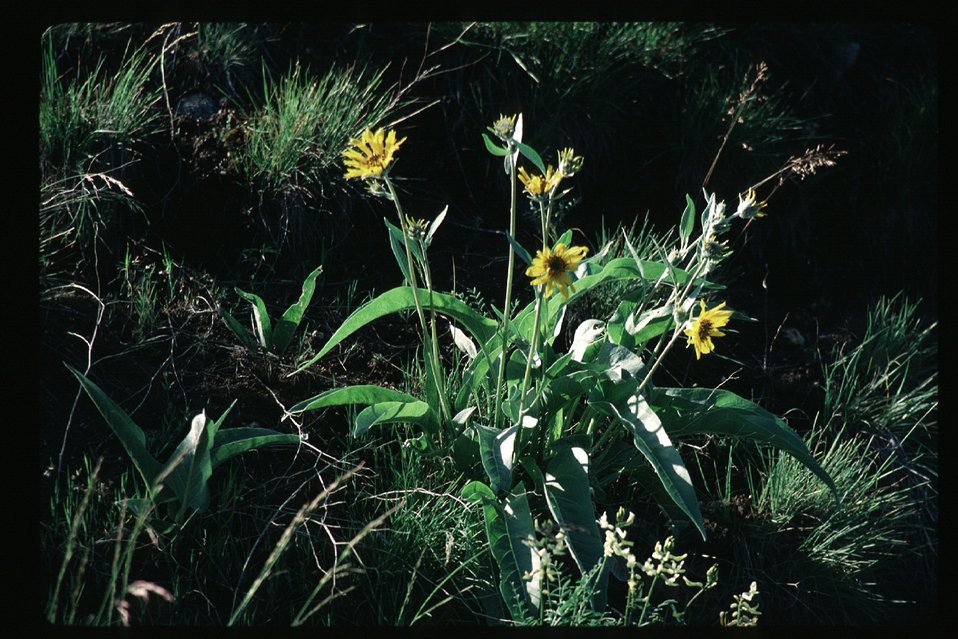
Arrowleaf Balsum Root Balsamorhiza Sagitata Scenic Wildflowers Vegetation Grass and brush USRD Upper Snake River District